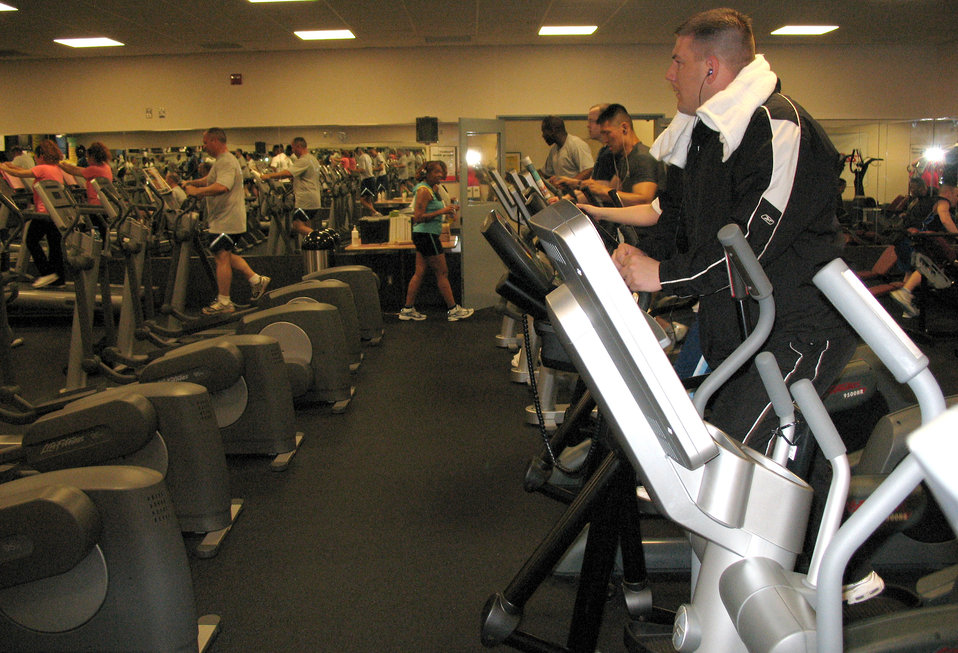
Fitness month focuses on health, social benefits

Fitness buffs work out May 10 at the fitness center at Yokota Air Base, Japan. May is National Fitness Month and many people use it as a time to increase their workout intensity.